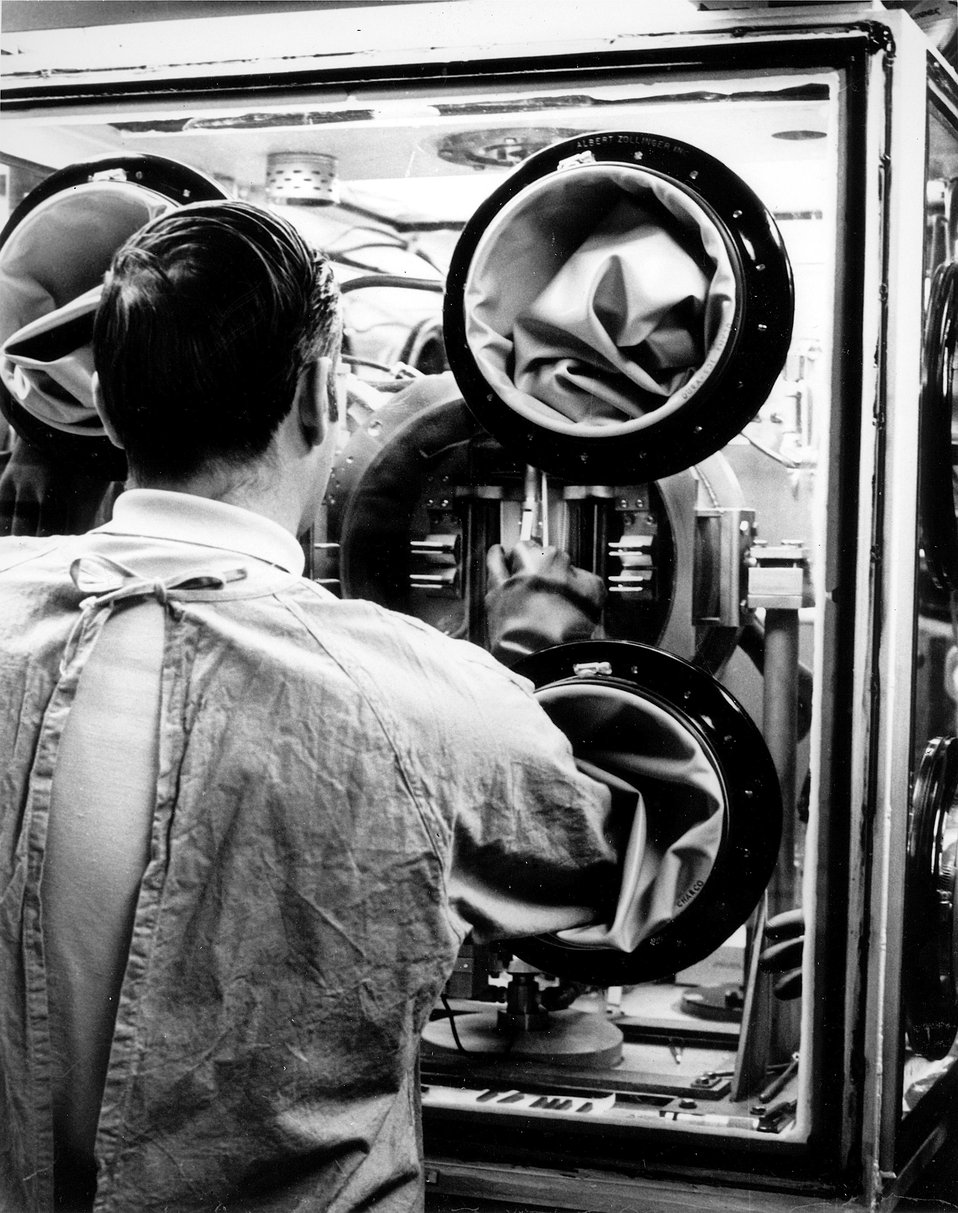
A sample of plutonium dioxide fuel is inserted in a high temperature furnace at Argonne.
c.1970